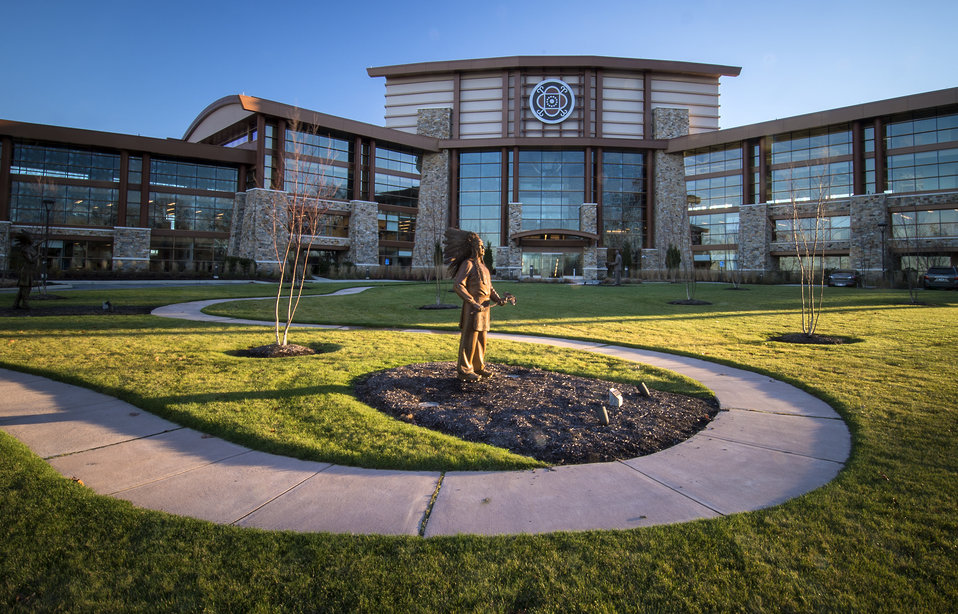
A U.S. Department of Agriculture (USDA) Rural Development (RD) Community Facility Loan was provided to the Mohegan Tribe for the construction of the Mohegan Tribe Community Center and Government Building in Uncasville, CT. USDA’s RD Community Facilities Programs makes and guarantees loans to develop essential community facilities in rural areas and towns of up to 20,000 in population. Loans and guarantees are available to public entities such as municipalities, counties, parishes, boroughs, and special-purpose districts, as well as to non-profit corporations and tribal governments. These funds can be used to construct, enlarge, or improve community facilities for health care, public safety, and public services. The Mohegan Tribe's newly completed Community Center and Government Building allows the tribal government to more fully and effectively administer the tribal government, health, housing and social programs of the Tribe and provide cultural resources and community gathering, and activities for its members. The 160,000 square foot building Center hosts an exhibit celebrating federal recognition, history of Mohegan Chiefs, a new Library and Archives space, Arts and Crafts room, gymnasium, and a new community room to enjoy food and family. The Center will continue the Tribe’s plan for growth and meeting the needs of its members. The ability to finance the project at reasonable rates through the USDA RD Community Facilities Programs ensures that the Tribal government more efficiently and effectively can manage the administration of essential government functions.